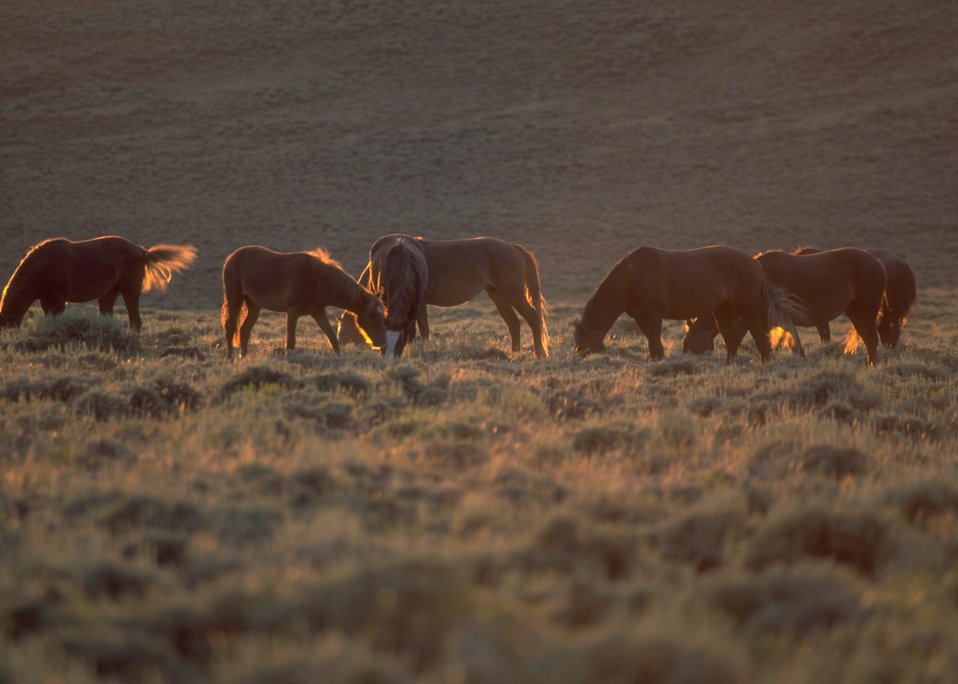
Wild horses, Rock Springs Field Office.